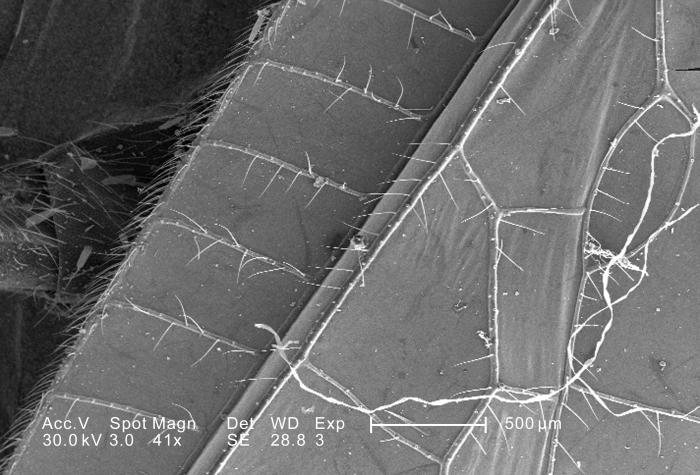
This scanning electron micrograph (SEM) depicted a magnified view of the wing of an unidentified green-colored flying insect found outside on the ground in the Decatur, Georgia suburbs; Magnified 41x. The debris covering the organism is mainly vegetative in nature, composed primarily of pollen granules, and disintegrated plant fibers.